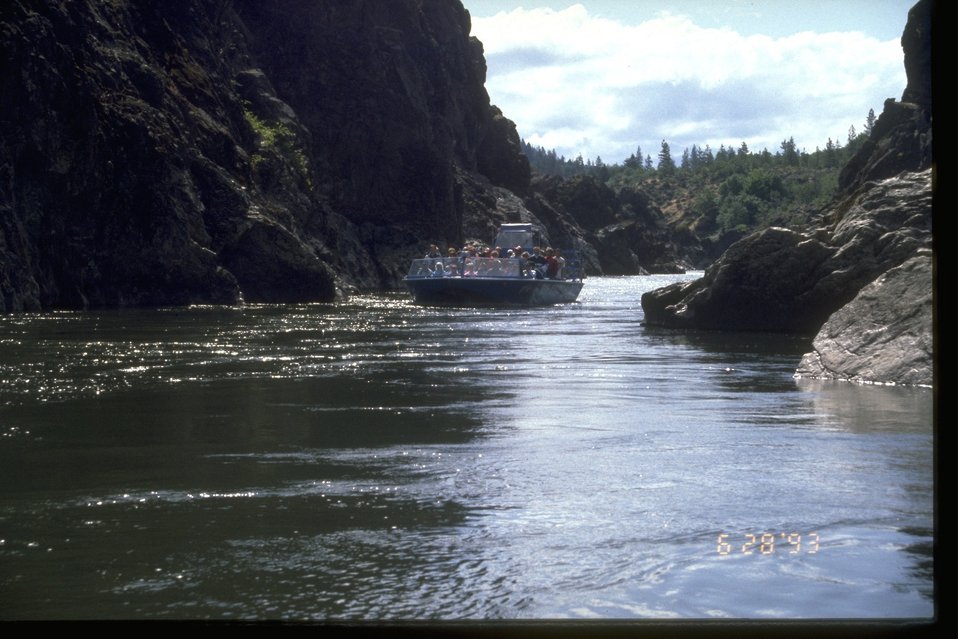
Large tourist jet boat in Hellgate Canyon on the Rogue River.